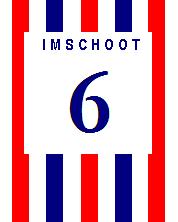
Français : maillot football shirt Deutsch: Fussballtrikot